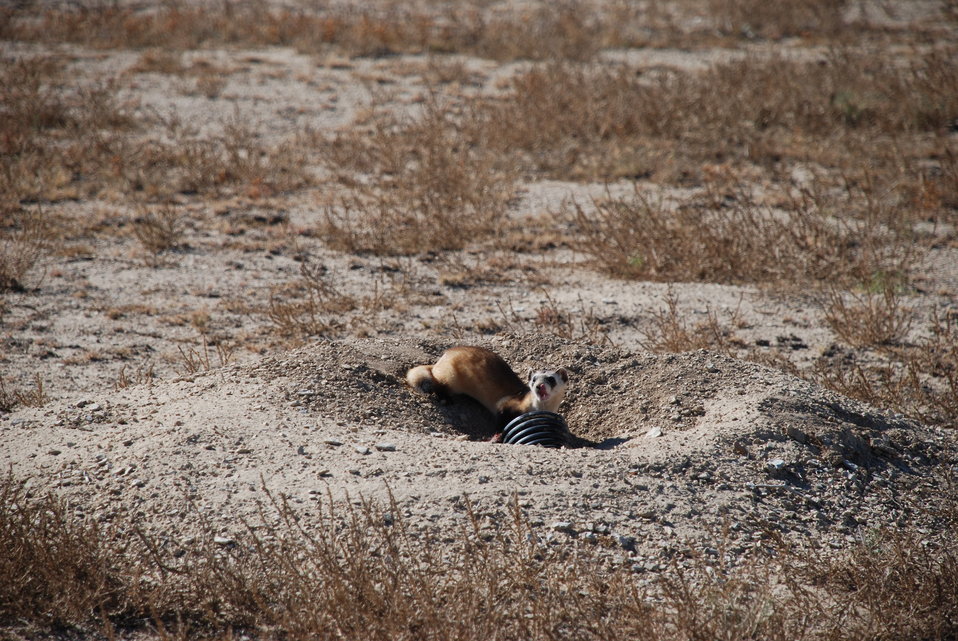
Black-footed Ferret Release

On Wednesday, October 30, 2013, thirty endangered black-footed ferrets were released onto cattle rancher Gary Walker's land, west of Pueblo, Colorado.

The release launched a potentially new way of preserving endangered species and was accomplished by way of a Safe Harbor Agreement (SHA). This SHA provides opportunities for private and Tribal landowners to volunteer their lands for reintroductions of this endangered species without affecting their land-use activities beyond mutually agreed-upon measures. It also extends these assurances to surrounding non-participating lands and other landowner interests. This SHA will be an important step in promoting the recovery of this iconic species.